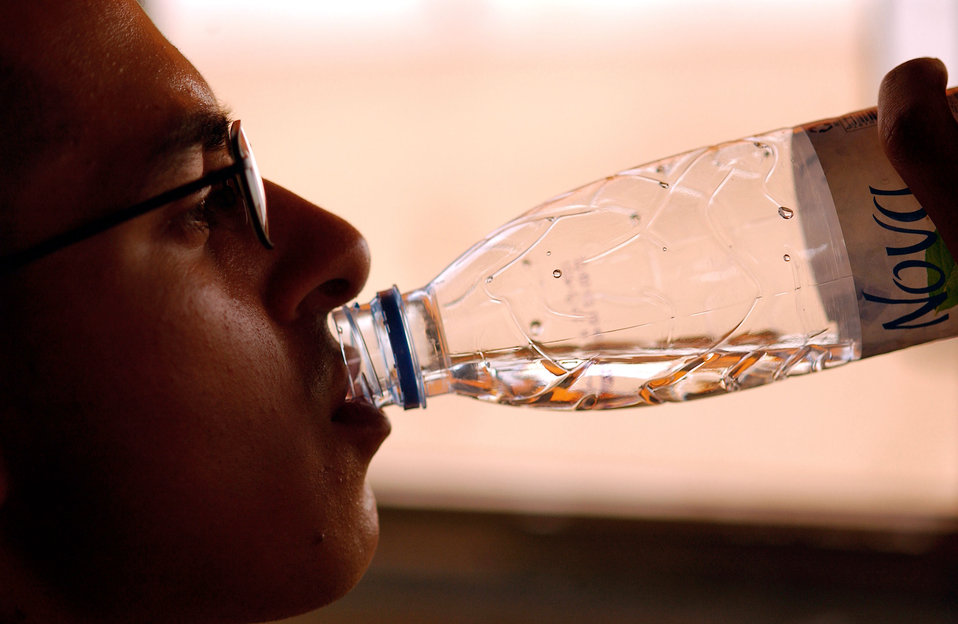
Water is your friend

OPERATION IRAQI FREEDOM -- Senior Airman Richard Aceves, a security forces journeyman deployed from the 163rd Air Reserve Squadron, March Air Force Base, Calif., to the 363rd Expeditionary Security Forces Squadron, keeps hydrated while patrol on April 4, 2003.